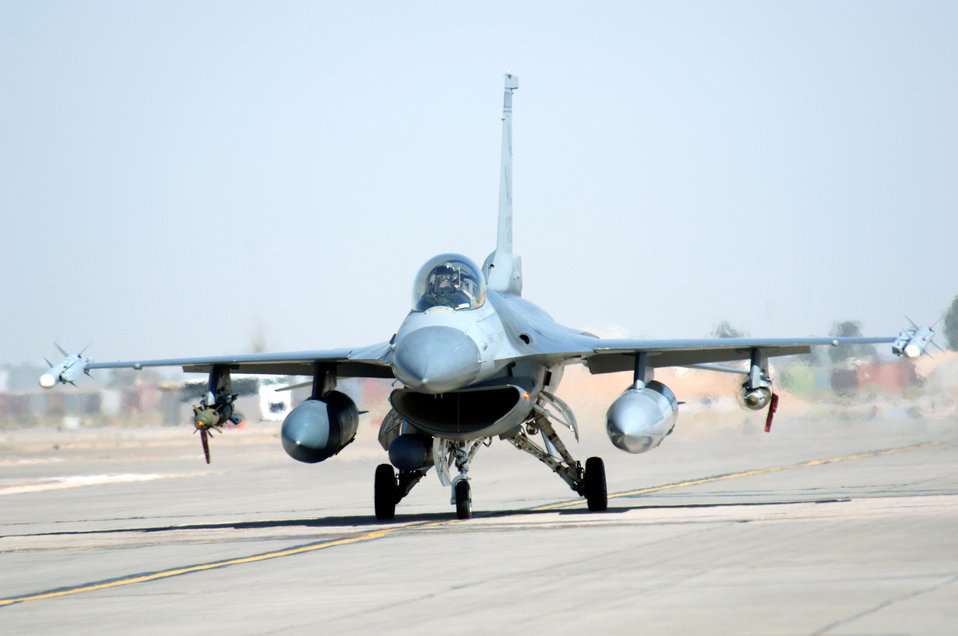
Flying missions support Operation Iraqi Freedom

An F-16 Fighting Falcon taxis at Balad Air Base, Iraq, after an Operation Iraqi Freedom mission on Monday, June 12. The F-16 is deployed from the Alabama Air National Guard's 187th Fighter Wing in Montgomery.